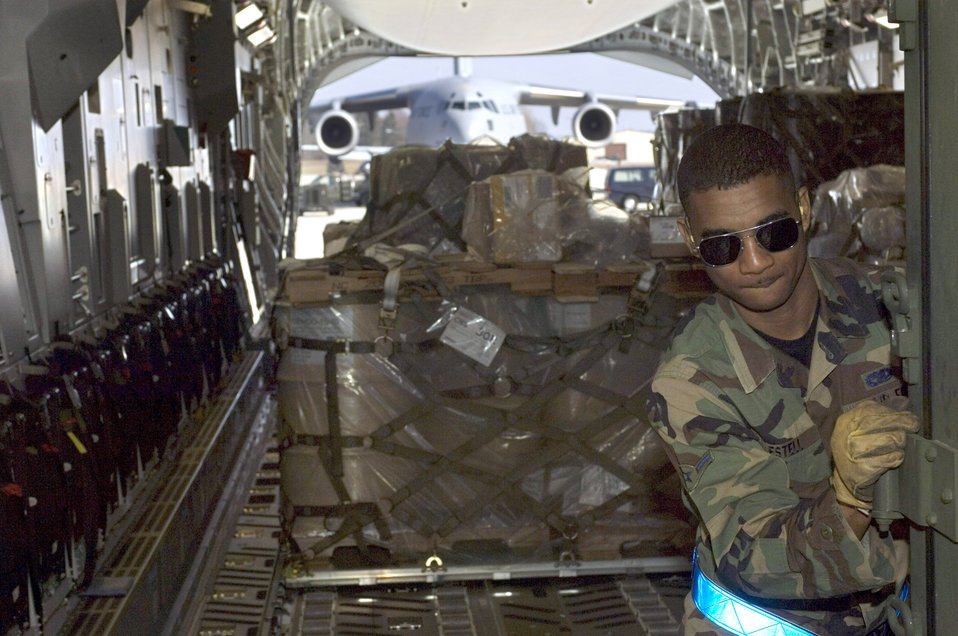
C-17 surpasses its 1 millionth flying hour

Airman Jason Estell pushes a pallet onto a C-17 Globemaster III at Ramstein Air Base, Germany, on Sunday, March 19, 2006. The Mississippi Air National Guard transport was due to fly to Al Asad and Balad Air Base, Iraq, as part of a mission that would put the air transport past the 1 millionth hour of flight time. Airman Estell is an air transportation specialist with Ramstein's 723rd Air Mobility Squadron.